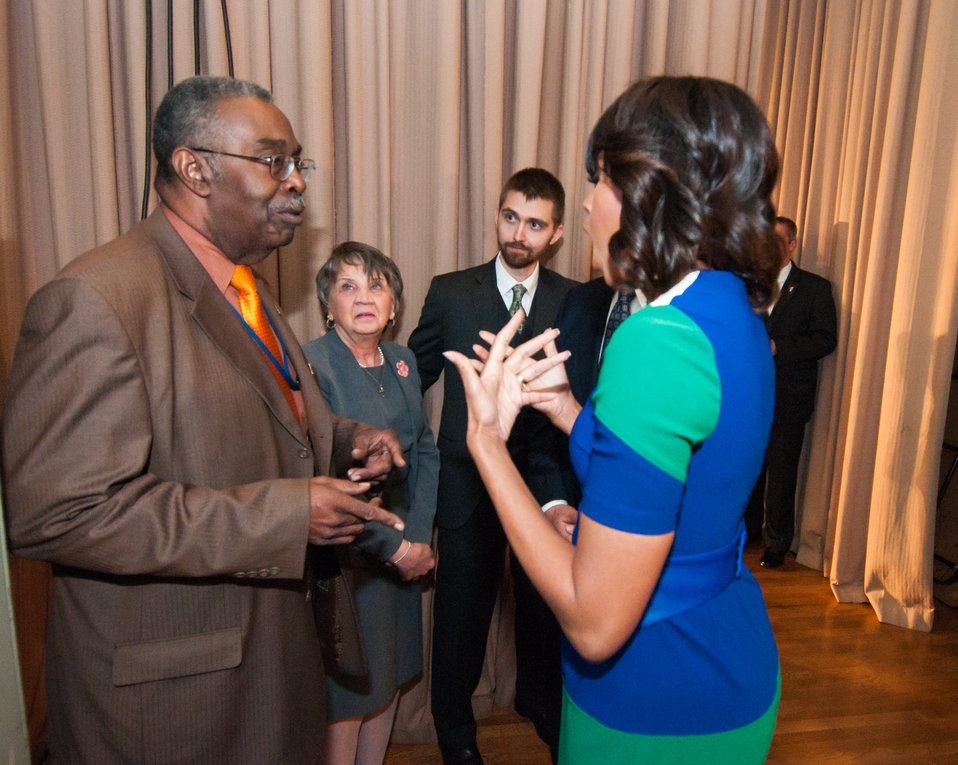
From left: Office of the Secretary employee Sam Shanklin, Office of the Executive Secretariat employee Sally Liska, Departmental Administration employee Chris Nelson,and First Lady Michelle Obama meet back stage at the U.S. Department of Agriculture (USDA) in Washington, D.C. on Friday, May 3, 2013. The First Lady visited USDA employees to thank them for their service and dedication. She also, reminded the employees of the importance of the work they do to support American farmers and ranchers, protecting the environment, lifting up rural communities, and keeping food safe, and working to end hunger.